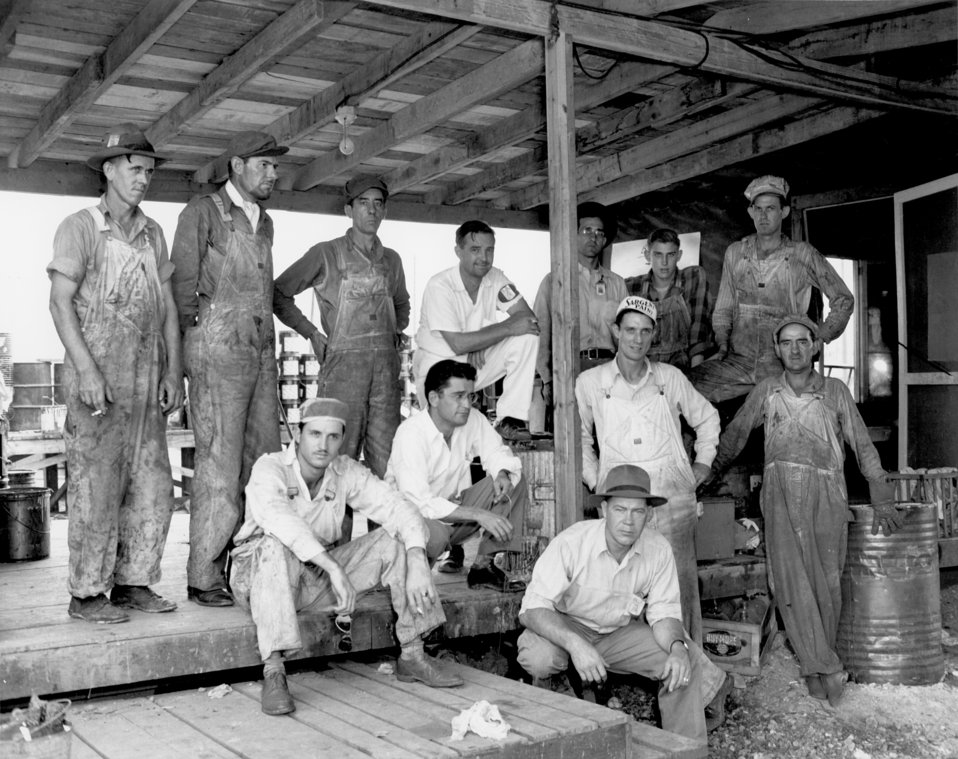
War Vet Painters 1944 Oak Ridge

pro72-10 DOE photo Ed Westcott 10-5-1944 War Vets at J. A. Jones Co. Paint Shop Group Picture Oak Ridge Tennessee